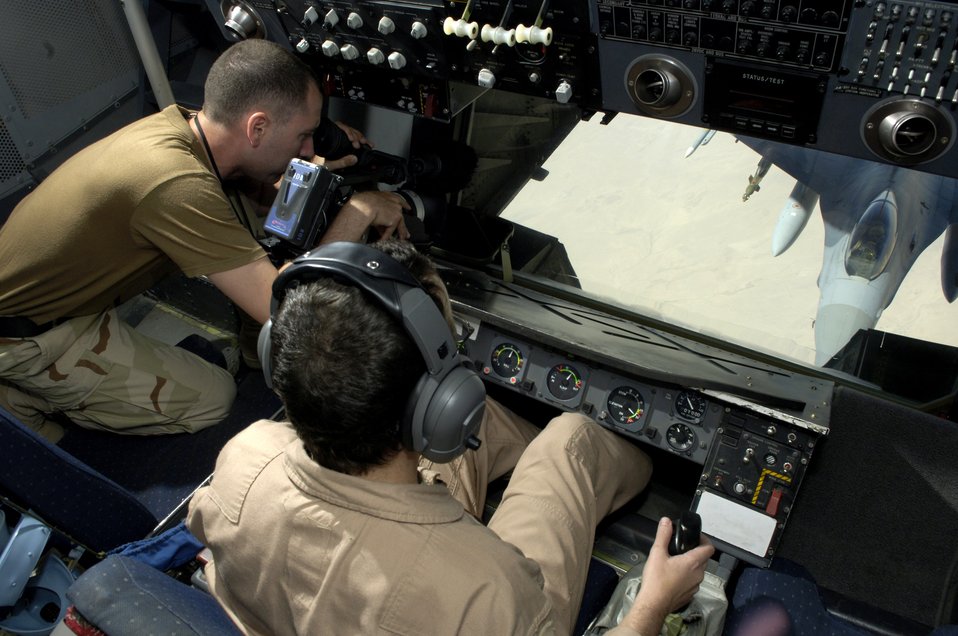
On a mission

Master Sgt. Todd McPeak refuels an F-16 Fighting Falcon while Staff Sgt. Trevor Pedro films the mission on July 18. Sergeant McPeak is a KC-10 Extender boom operator for the 908th Expeditionary Air Refueling Squadron. Sergeant Pedro is a videographer for the U.S. Central Command Air Forces news team deployed to Southwest Asia.